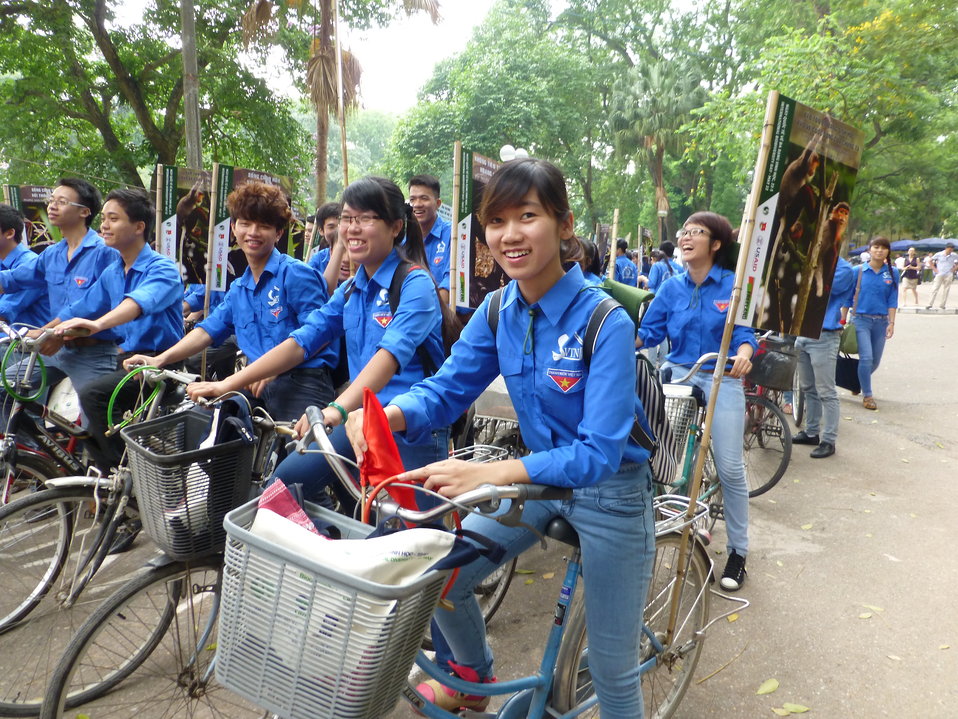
USAID Supports International Day for Biological Diversity in Hanoi